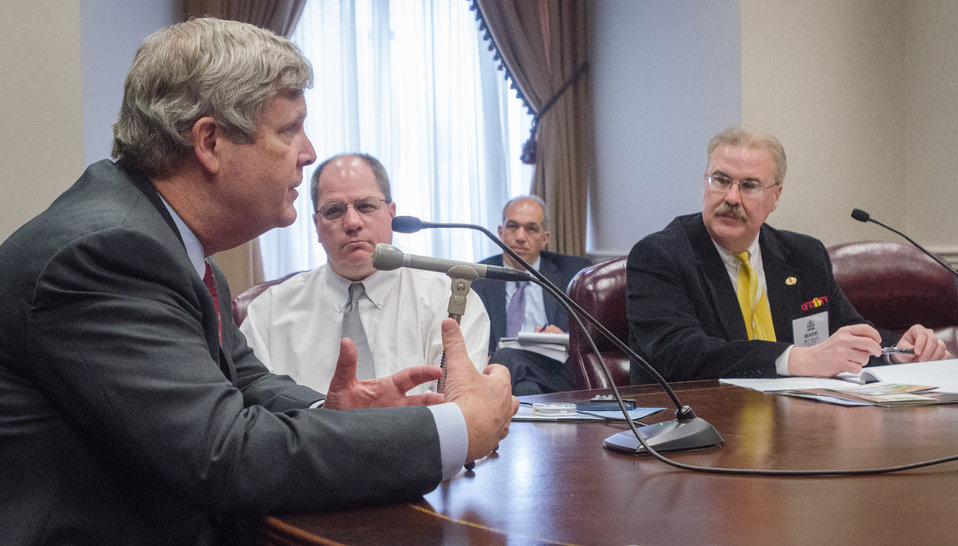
Agriculture Secretary Tom Vilsack speaks with and answers questions from farm broadcasters at the U.S. Department of Agriculture (USDA) on Tuesday, May 14, 2013, in Washington, D.C.